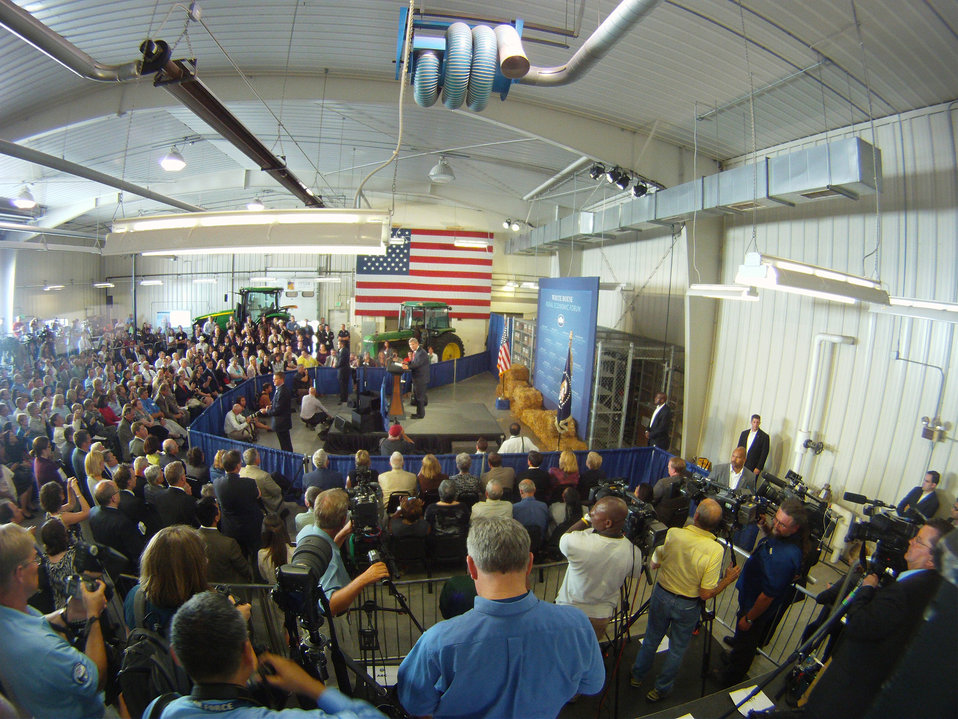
Agriculture Secretary Tom Vilsack speaking at the Northeast Iowa Community College, for a White House Rural Economic Forum on Tuesday, Aug. 16, 2011. Agriculture Secretary and chair of the White House Rural Council Vilsack, noted that the President’s visit would focus on agriculture’s contribution to the national economy, and how to create more jobs in rural America.